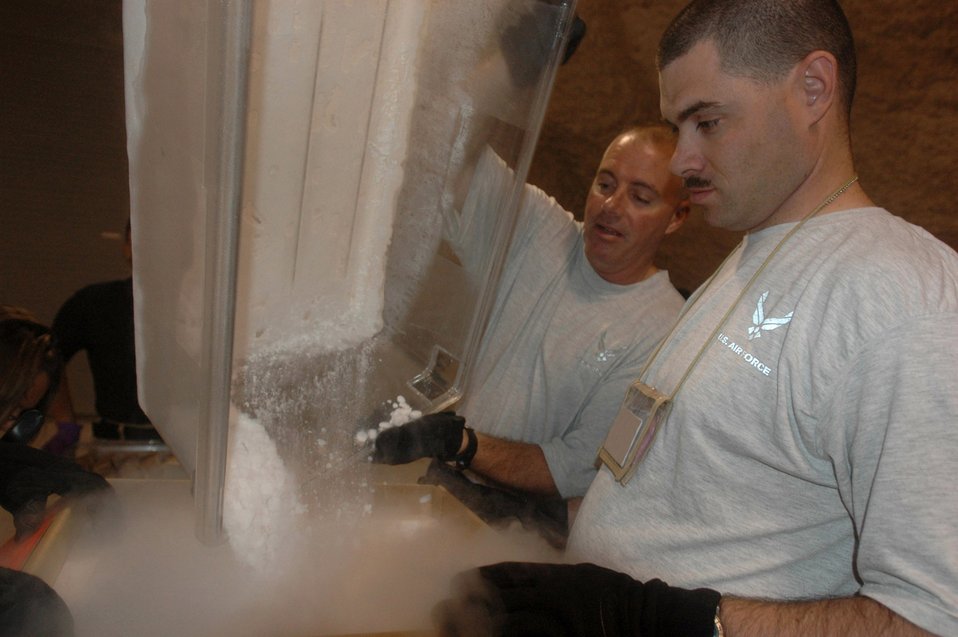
Blood center supports U.S., coaltion warfighters

Senior Master Sgt. Scott Graham (left) pours dry ice into a shipping container while Staff Sgt. Joel Ketchum prepares to seal the box Aug. 4 in Southwest Asia. The shipping containers are made of insulated foam to help keep the blood components cool until they reach their final destination. Sergeants Graham and Ketchum are assigned to the 379th Air Expeditionary Wing.